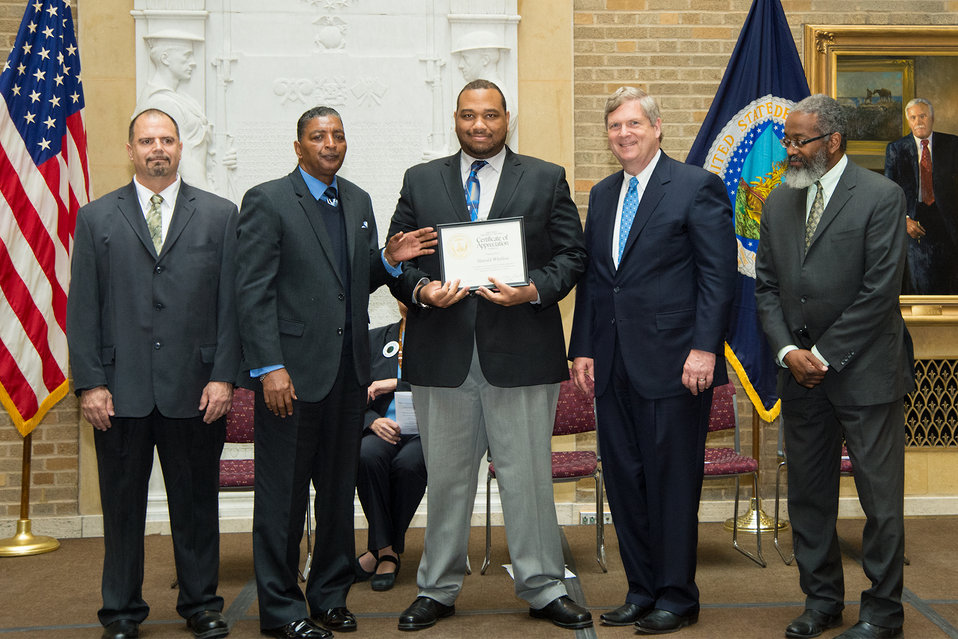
U.S. Department of Agriculture (USDA) Departmental Management Harold Whitlow receives the Unsung Hero Award from USDA’s Organization of Professional Employees President (OPEDA) Louis Iacoletti, USDA DM Lawrence Graham, Agriculture Secretary Tom Vilsack and USDA Assistant Secretary for Administration Dr. Gregory Parham at USDA in Washington, D.C. on Wednesday, May 7, 2014.